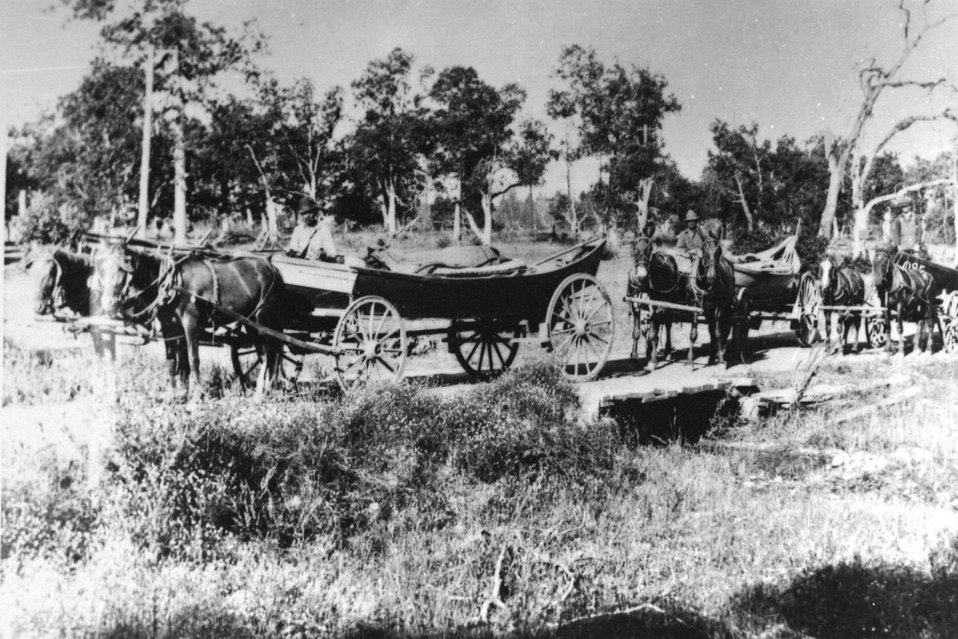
Hauling fishing boats C. 1915